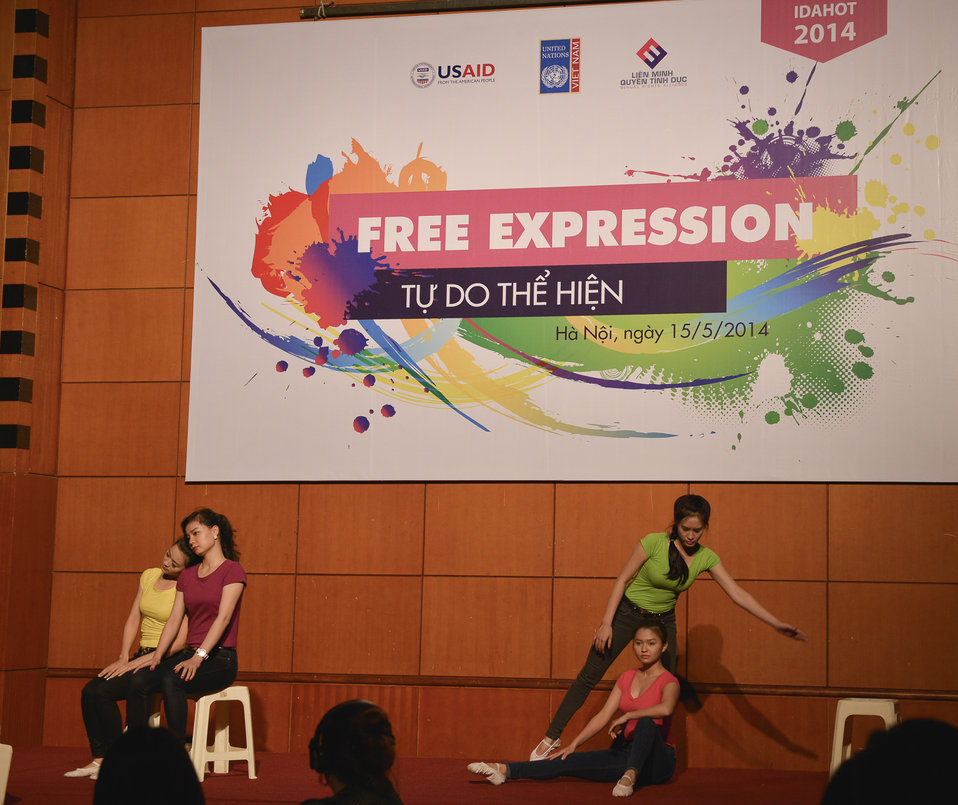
USAID supports celebration of IDAHOT Day 2014 in Hanoi

Hanoi, May 15, 2014.